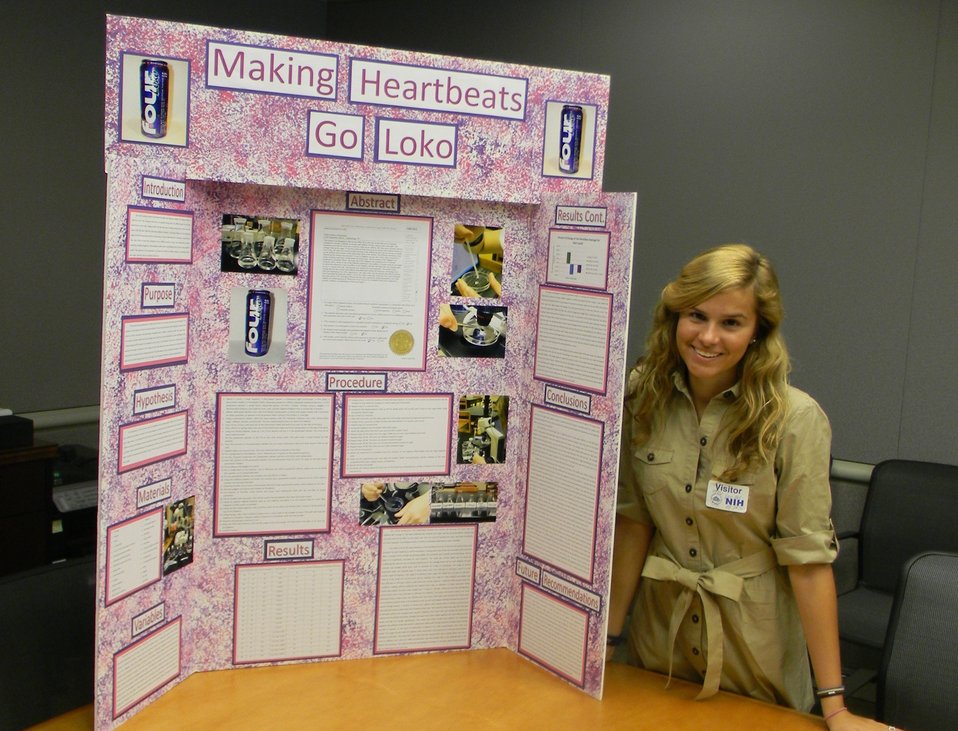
Schumacher presents5

Darby Kathryn Schumacher, 2nd place winner of the 2011 Addiction Science Awards, presents her study to NIDA scientists